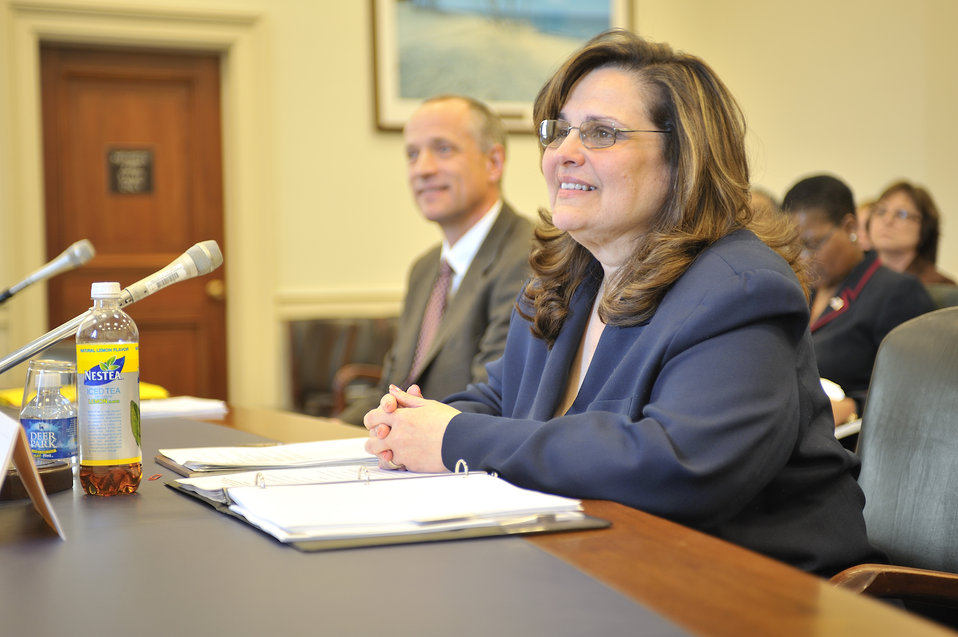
Ines Triay, Assistant Secretary

Ines Triay, former Assistant Secretary for Environmental Management (EM)